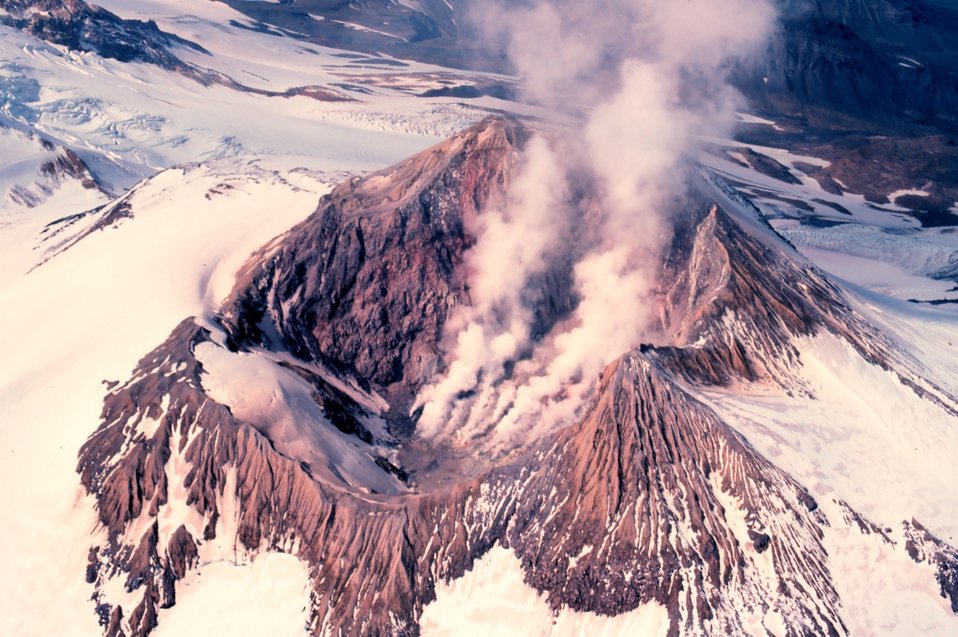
Katmai area